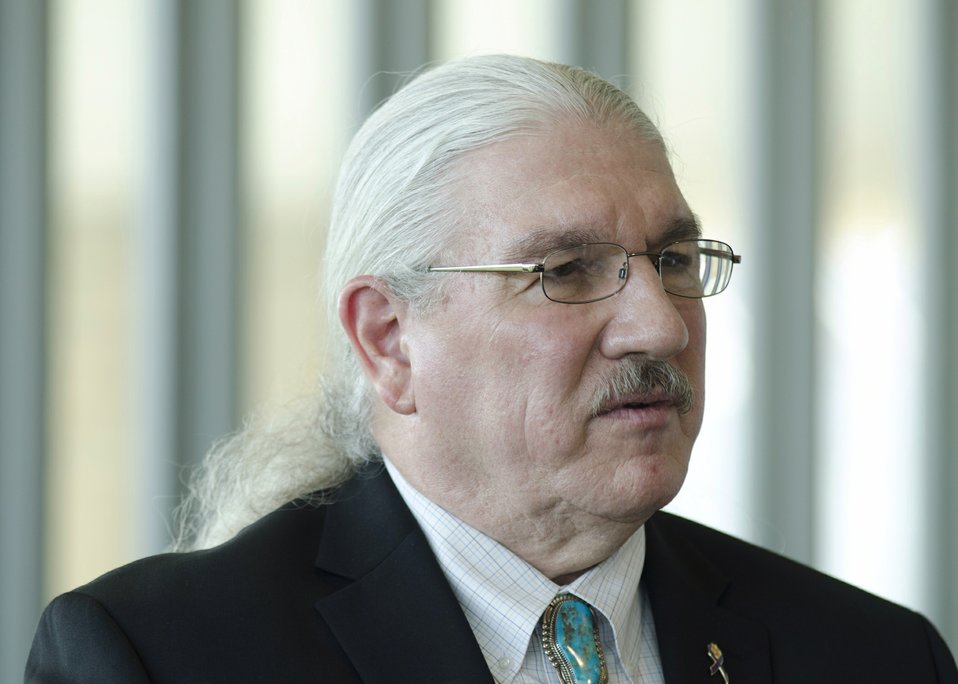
U.S. Department of Agriculture (USDA) Deputy Under Secretary Natural Resources and Environment (NRE) Arthur “Butch” Blazer speaks at the conclusion of the first business meeting of USDA’s Council for Native American Farming and Ranching (CNAFR) held at the National Museum of the American Indian in Washington, D.C., on Wednesday, Aug. 15, 2012. CNAFR was created to advise the Secretary on ways to eliminate barriers to participation for Native American Farmers and Ranchers in USDA programs. The Council was established as part of the Keepseagle settlement, and is conducted under the oversight of USDA's Office of Tribal Relations under the Office of the Secretary of Agriculture.